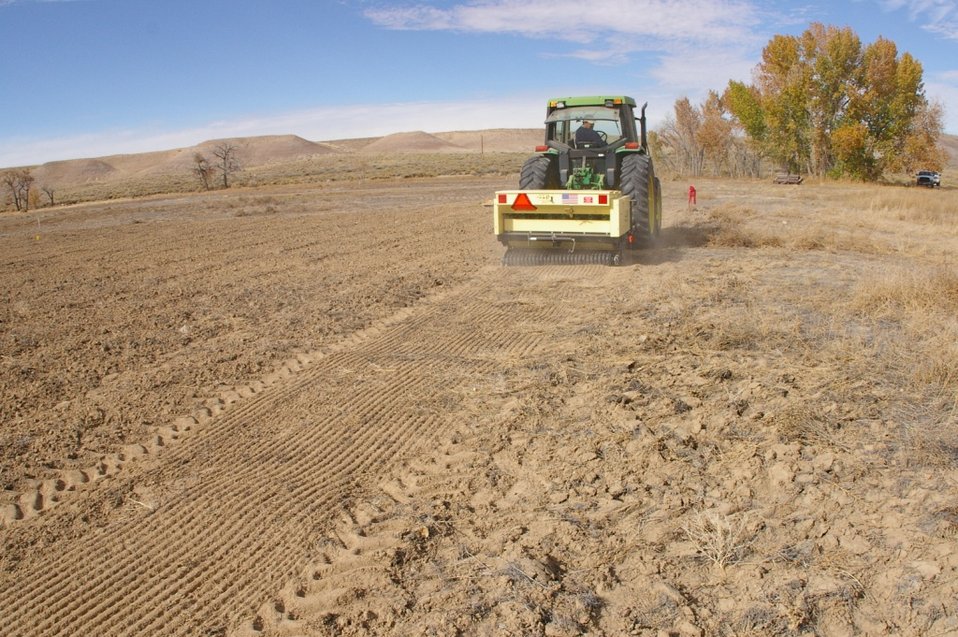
Broadcast Seeder

Broadcast seeding a grassland research plot in the fall on Ouray National Wildlife Refuge.